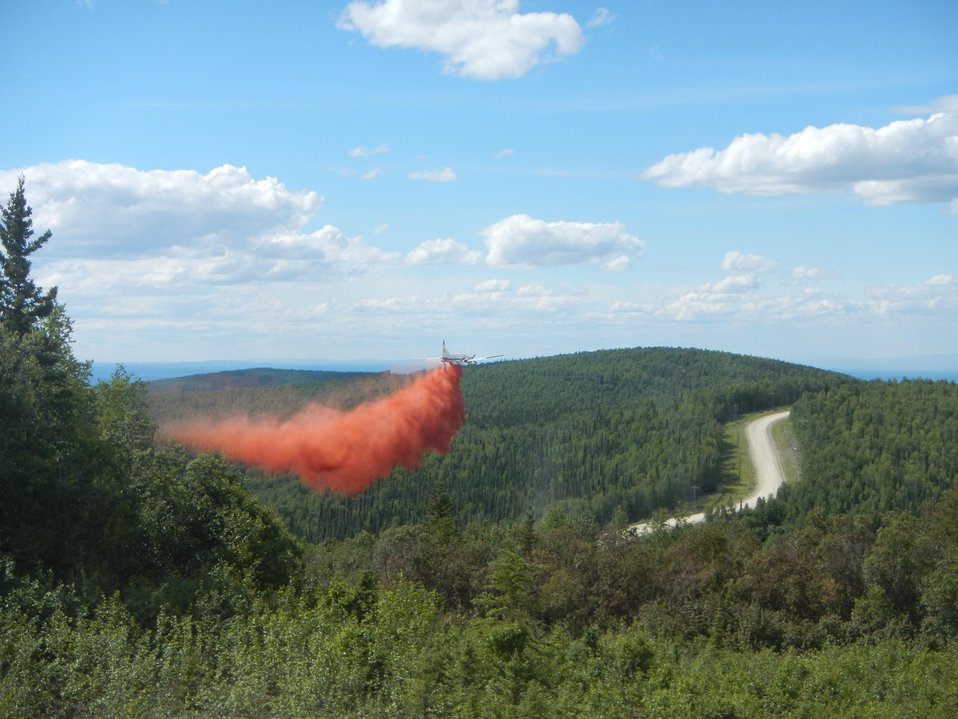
Aircraft makes fire retardant chemical drop on Stewart Creek Fire. The Stewart Creek Fire located 25 miles east of North Pole, AK began on Jun. 19, 2013 due to human causes and has consumed an estimated 85, 475 acres. The fire is approximately 57% contained.